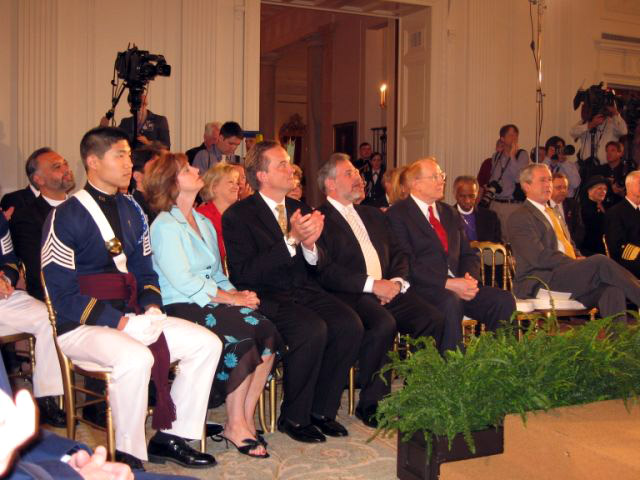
Virginia Tech cadets participate in National Day of Prayer

Virginia Tech Cadet Houston Yu (far left) sits near President George W. Bush as they listen to the ceremony opening remarks of the National Day of Prayer May 3 at the White House in Washington, D.C. Cadet Yu was one of five speakers at the ceremony. The cadet is a member of the Virginia Tech Air Force ROTC.